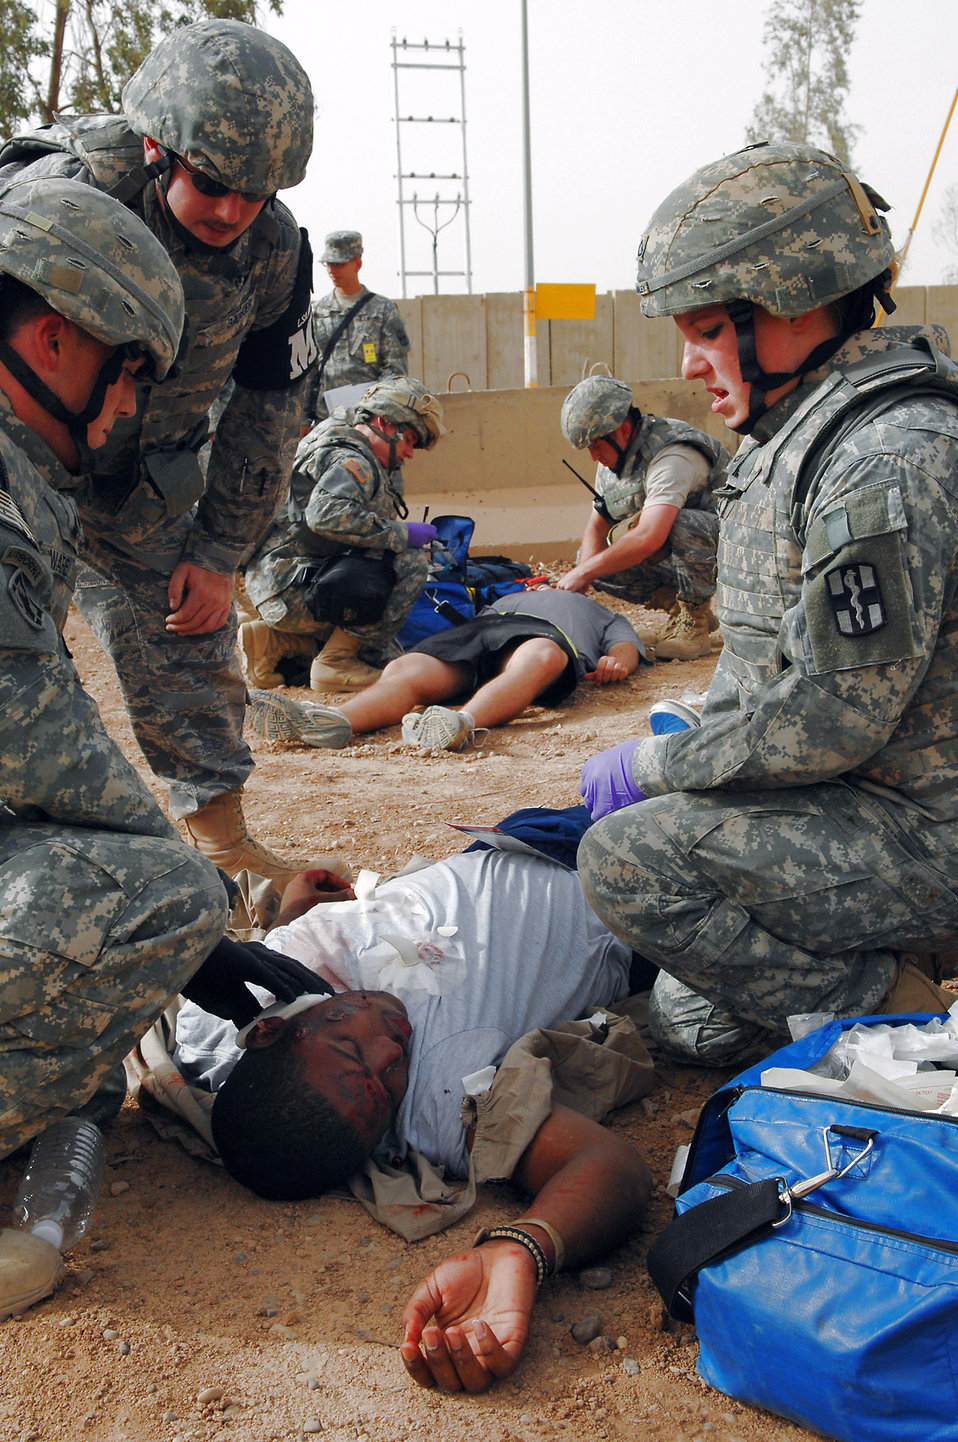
Worst case scenario

Air Force and Army emergency responders perform self-aid and buddy care on a patient with simulated facial burns and shrapnel wounds during a mass casualty battle drill March 31 at Balad Air Base, Iraq. The battle drill tested the ability of base members to respond to an emergency situation and required Airmen, Soldiers and government-contracted personnel to work together in base recovery efforts following a simulated mass casualty event.